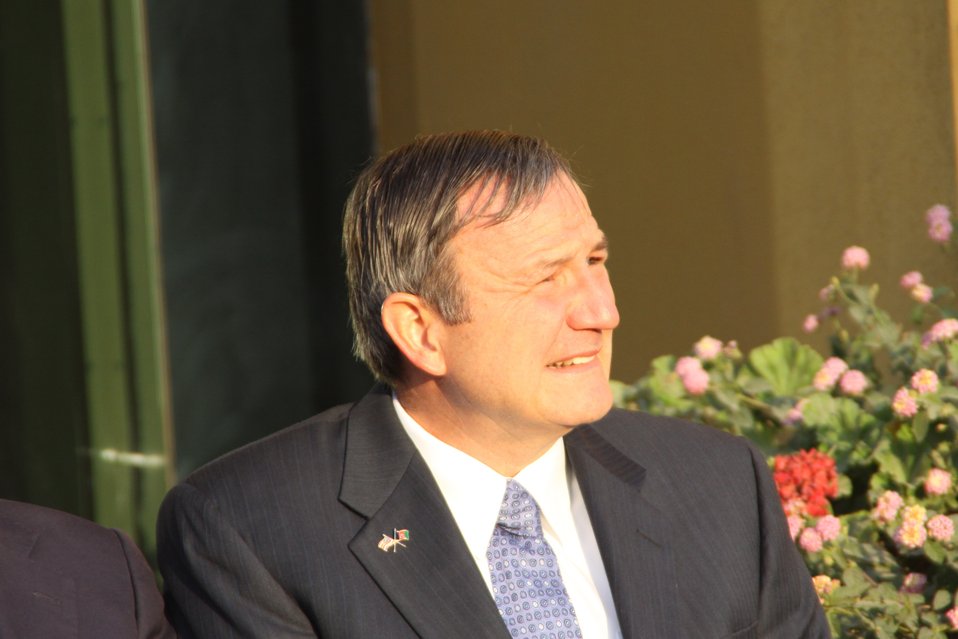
Ambassador Karl W. Eikenberry